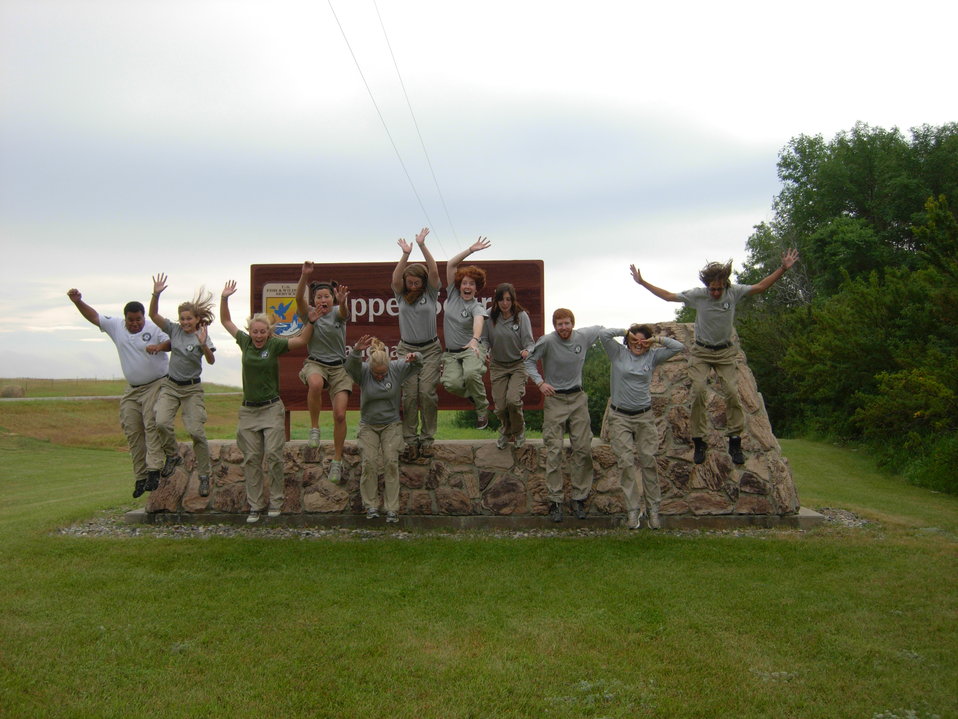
Team Oak 7 AmeriCorps Crew

Havin' fun! The Team Oak 7 AmeriCorps crew jumps in front of the Upper Souris National Wildlife Refuge sign.